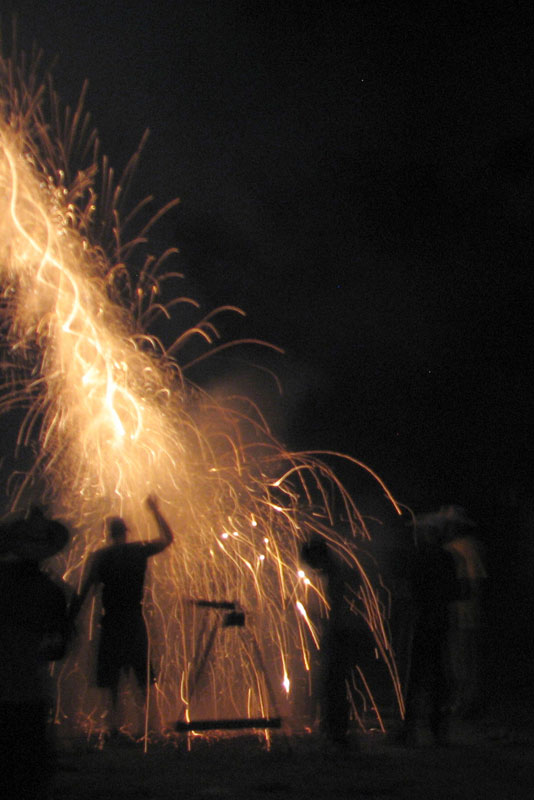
Pyrotechnics lighting up lines of fireworks in 2007 parrandas.